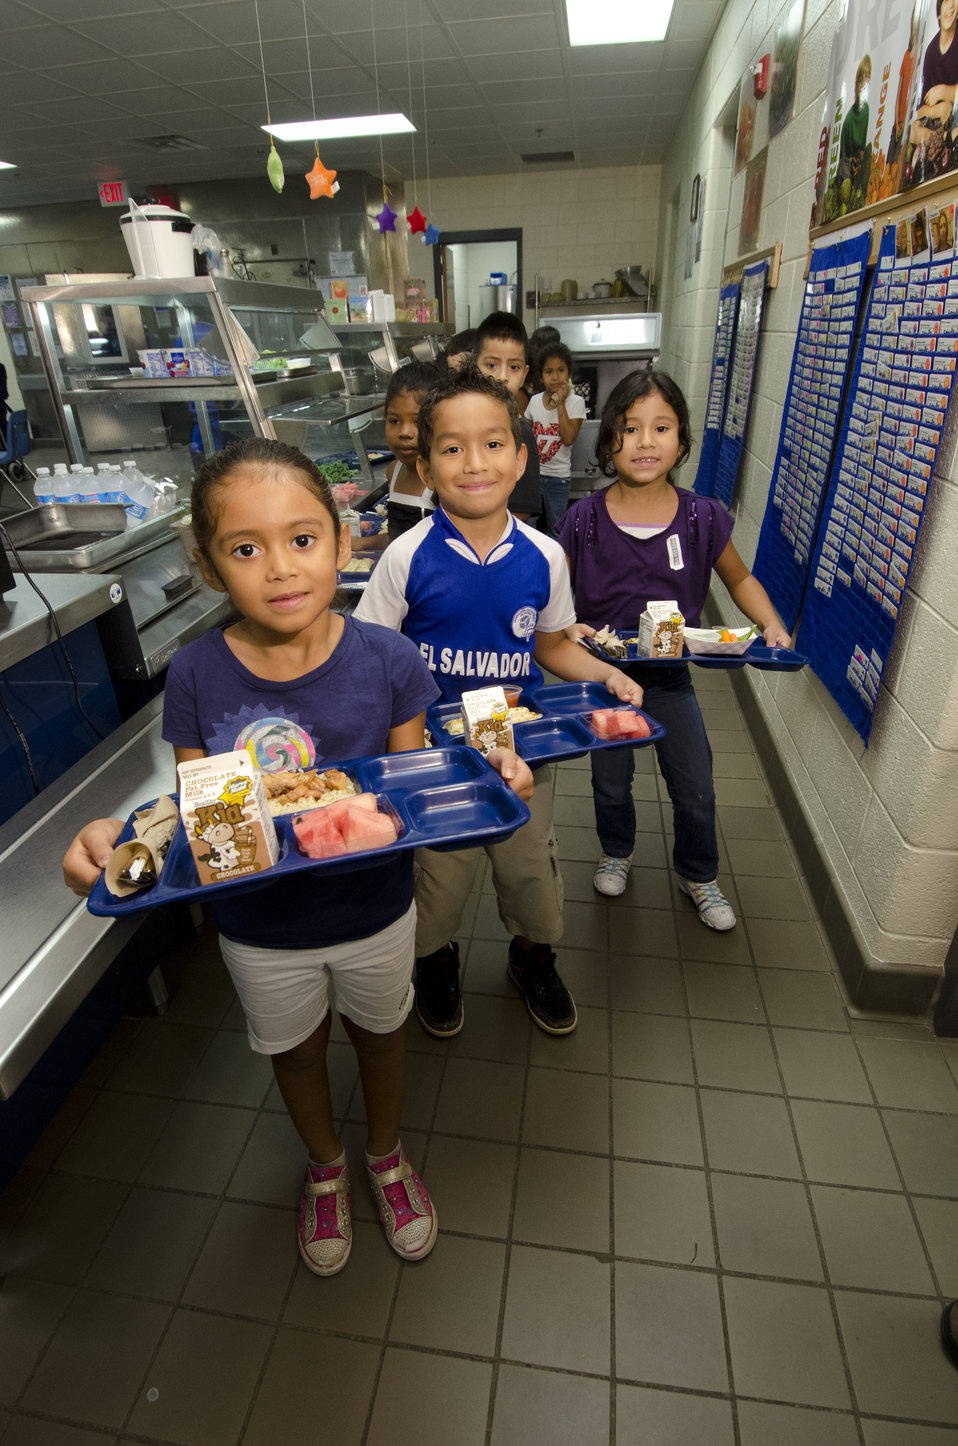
School lunch staff and students enjoy the new school lunch menu created to meet the new standards at the Yorkshire Elementary School in Manassas, VA on Friday, Sept. 7, 2012.